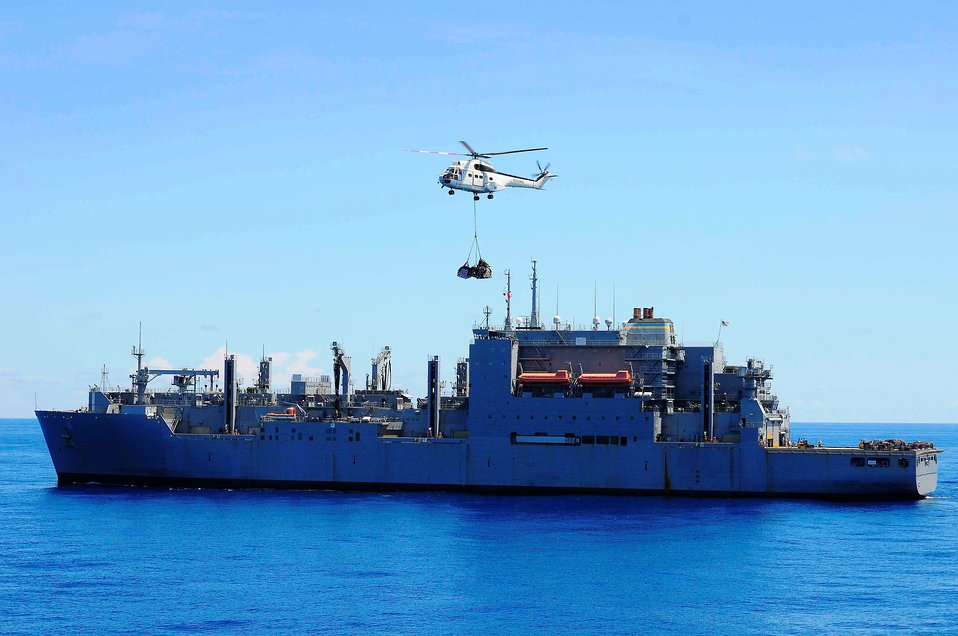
A Puma Helicopter Transports Cargo from USNS Richard E. Byrd to USNS Mercy

A Military Sealift Command-contracted SA-330J Puma helicopter transports cargo from the Military Sealift Command resupply ship USNS Richard E. Byrd (T-AKE 4) to the Military Sealift Command hospital ship USNS Mercy (T-AH 19) during a vertical replenishment at sea in the Pacific Ocean on June 29, 2010. Mercy is conducting Pacific Partnership 2010, the fifth in a series of annual U.S. Pacific Fleet humanitarian and civic assistance endeavors to strengthen regional partnerships.